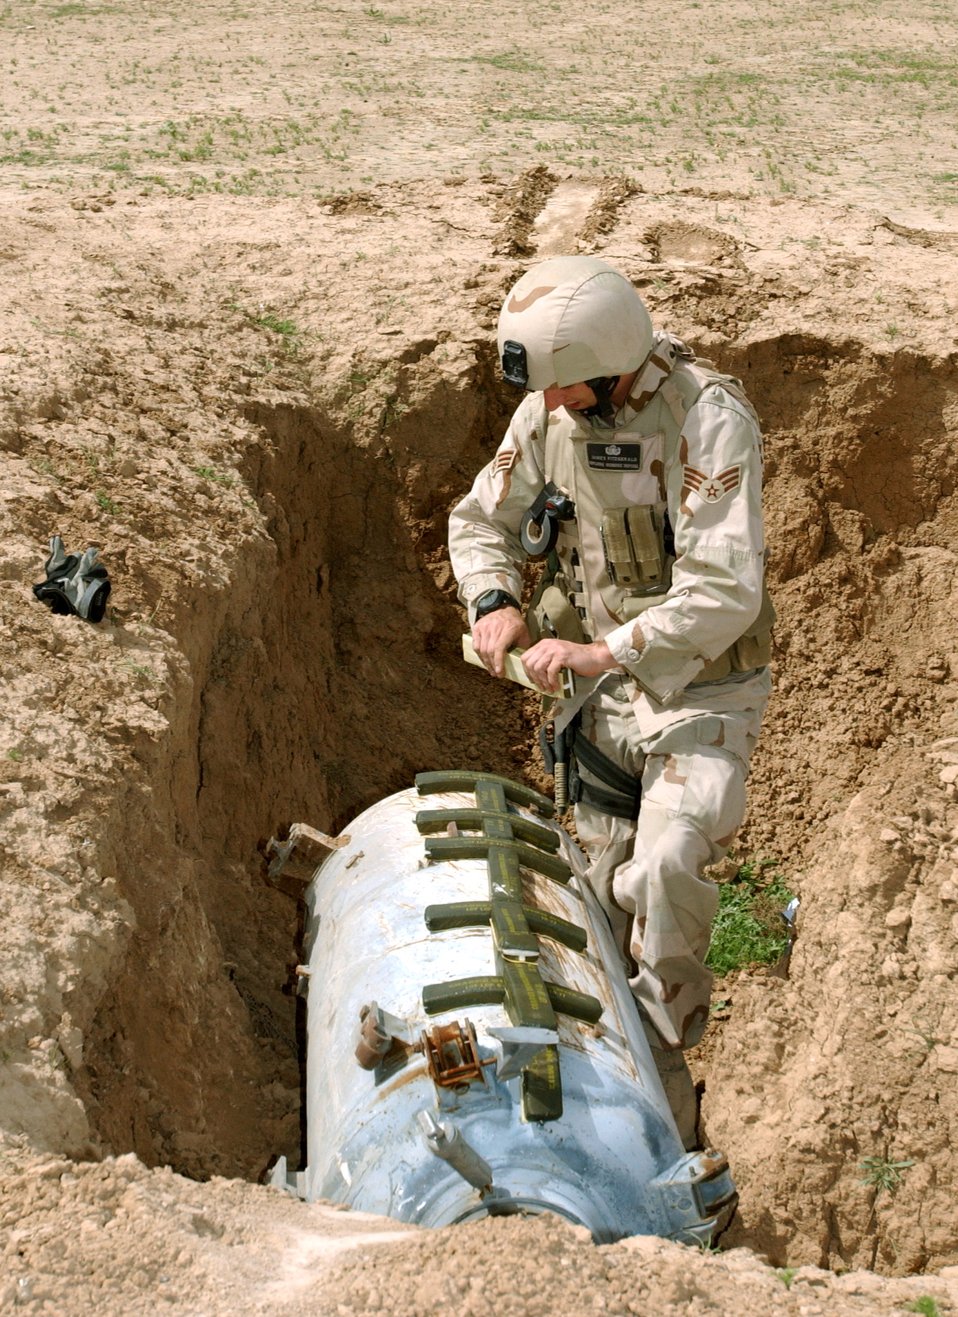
Having a blast

KIRKUK, Iraq -- Senior Airman James Fitzgerald laces C-4 explosives to a rocket motor preparing it for disposal. He is an explosive ordnance disposal Airman assigned to the 506th Expeditionary Civil Engineer Squadron at nearby Kirkuk Air Base.